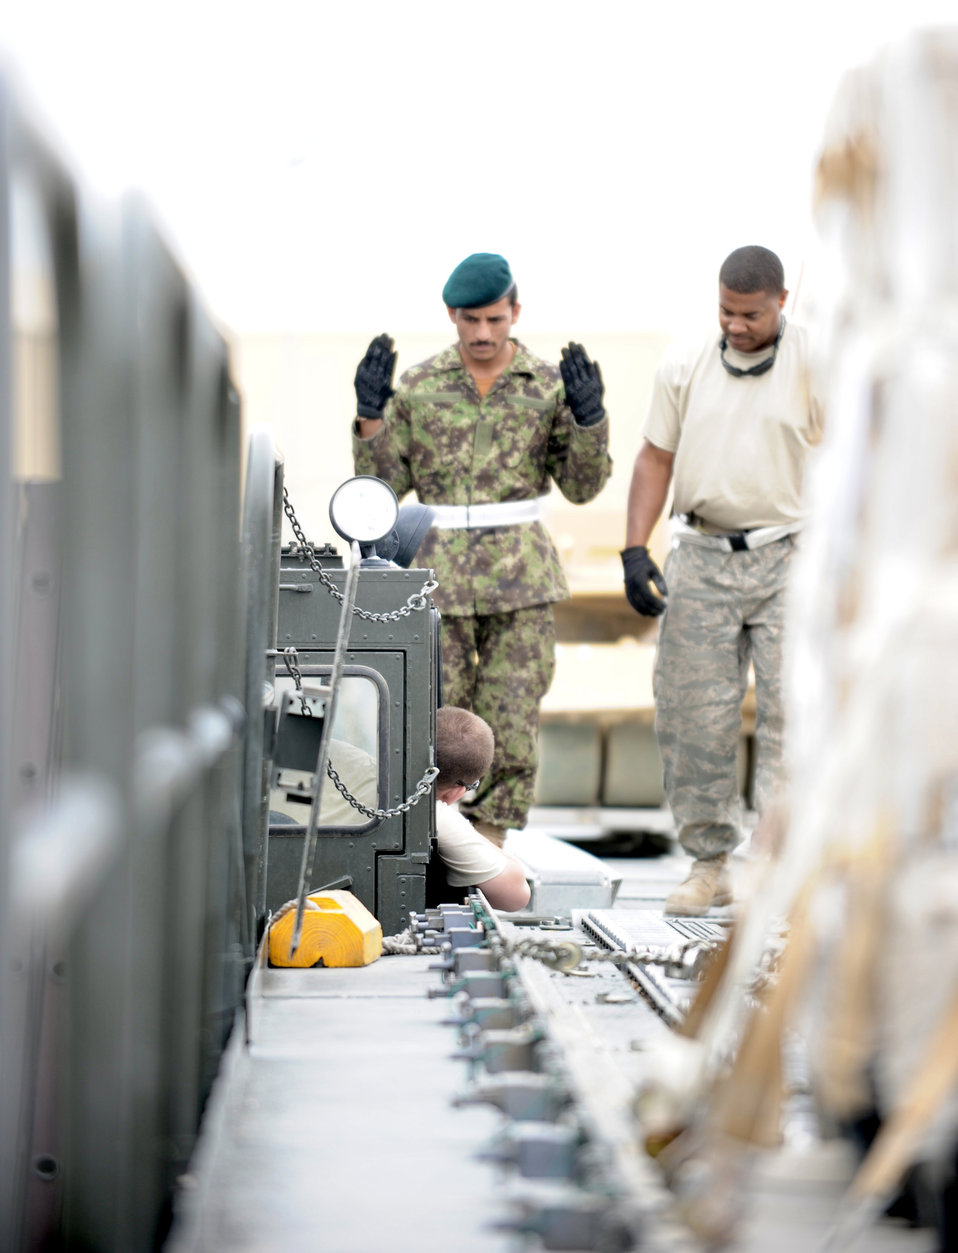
Afghan aerial porters visit Bagram, learn to supply the fight more efficiently

Staff Sgt. Vincent Ross trains an Afghan aerial porter to safely guide a 60,000-pound capable Tunner cargo loader toward its intended cargoJuly 28, 2010, at Bagram Airfield, Afghanistan. Sergeant Ross is an aerial porter with the 455th Expeditionary Aerial Port Squadron deployed from the 69th Aerial Port Squadron at Joint Base Andrews, Md.